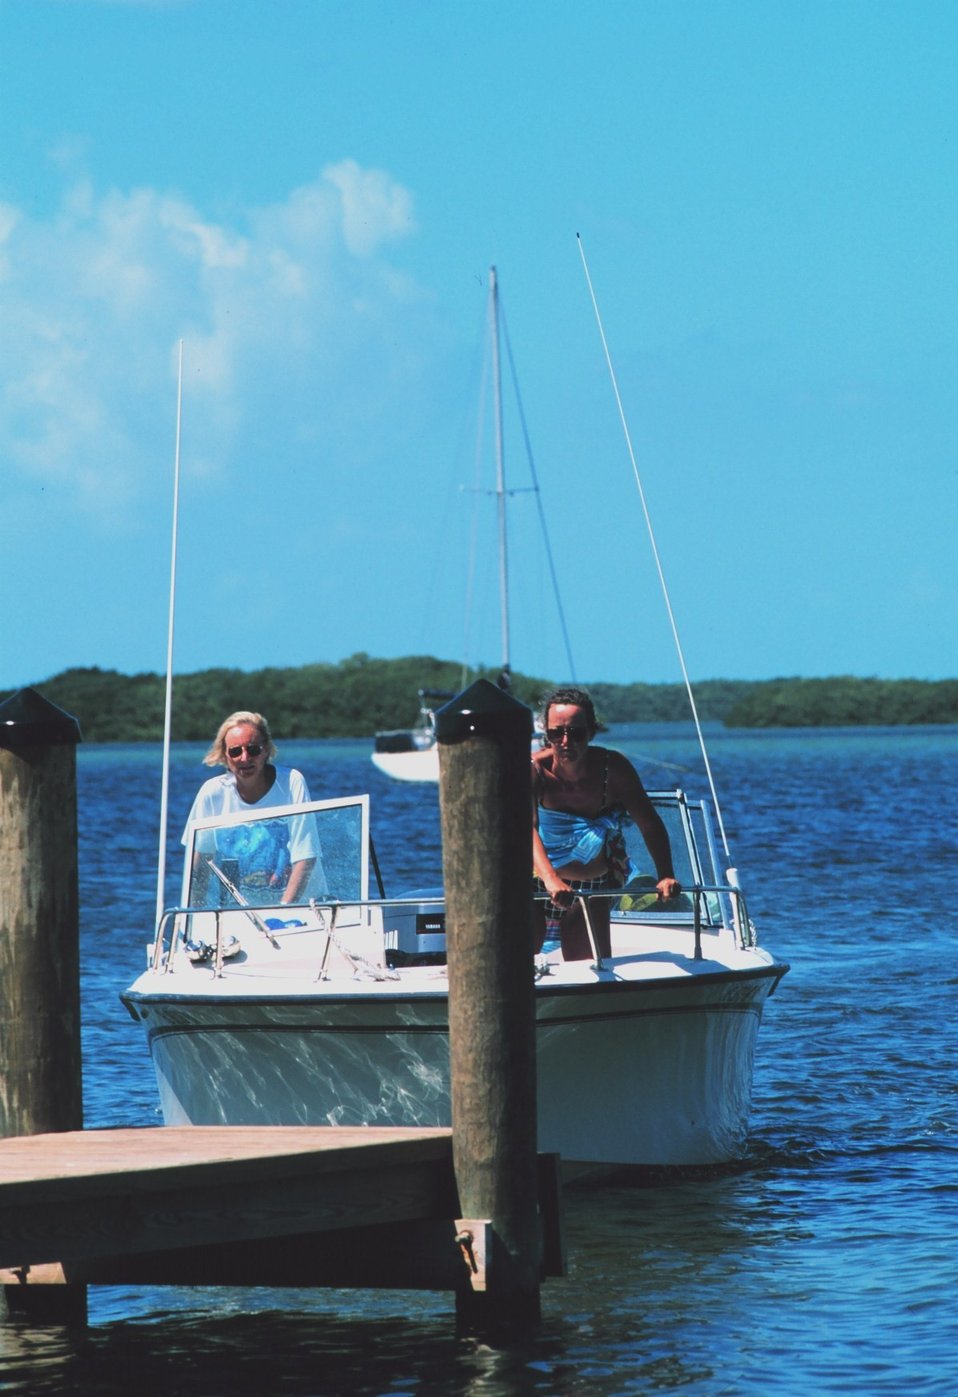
Commuting to lunch at Islamorada Fish Co. restauarant and market